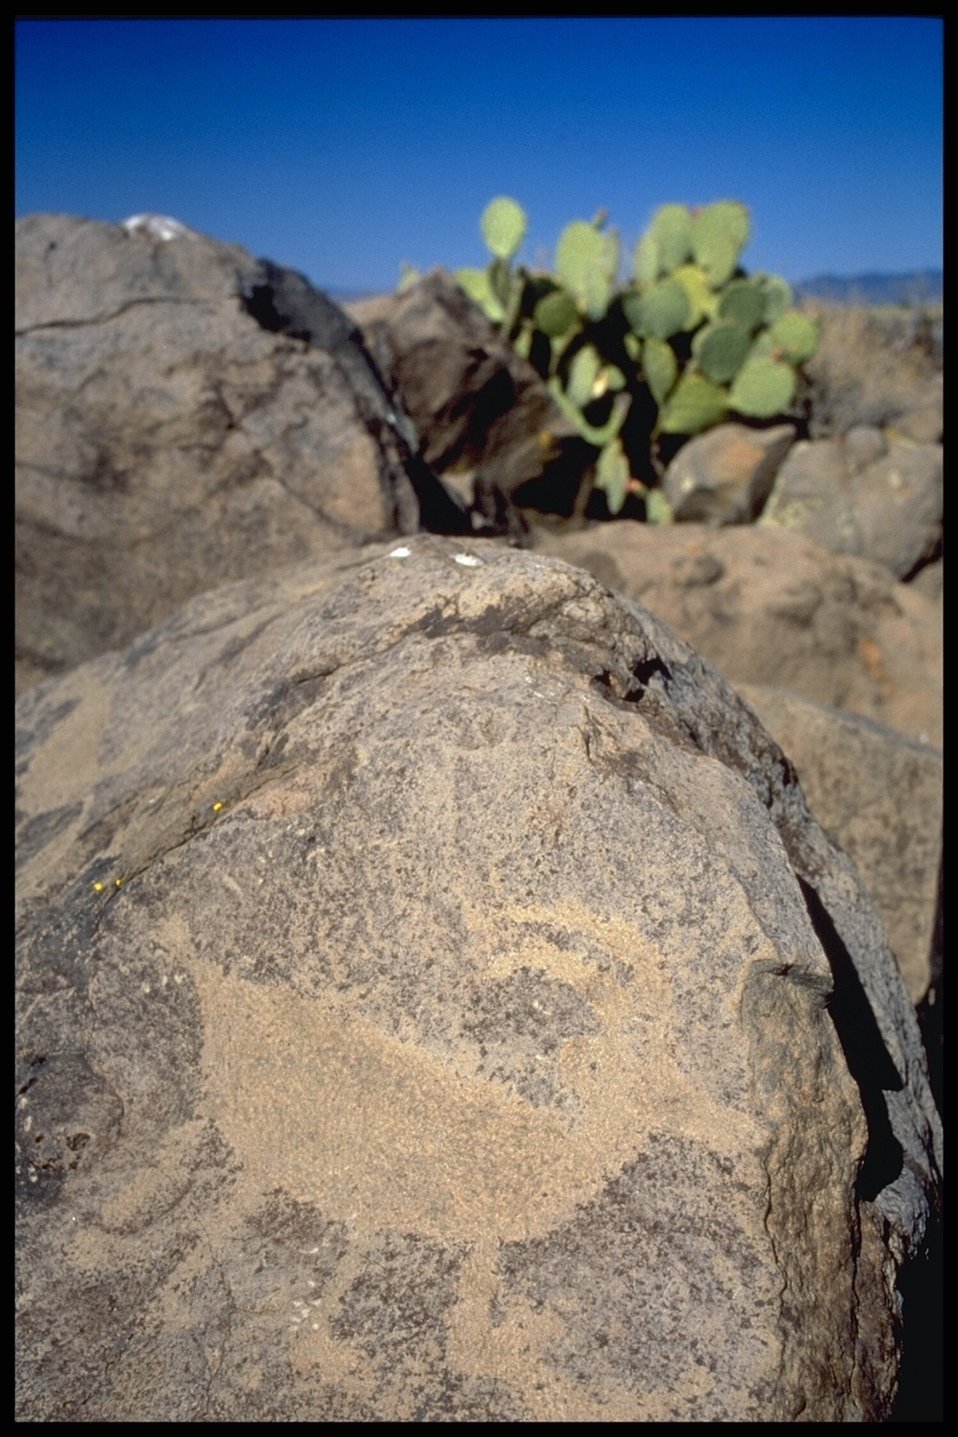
A Petroglyph (rock art) in the Agua Fria National Monument and a Prickly Pear Cactus in the background.